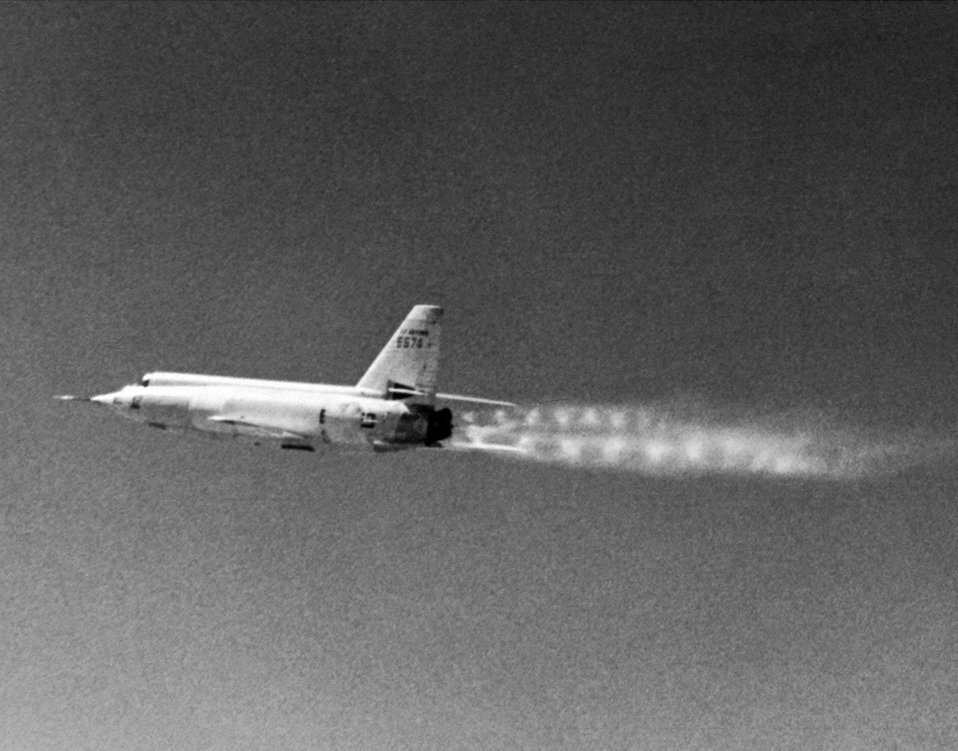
X-2 in the mid-1950s

The X-2 rocket plane in flight during the mid-1950s.